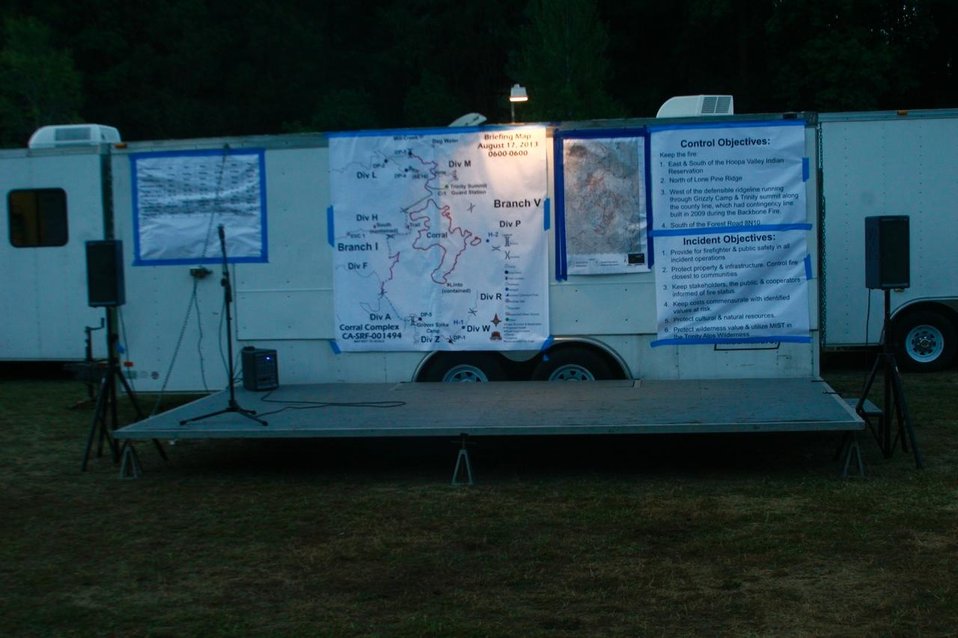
The Corral Complex Fire Incident Command Post glows under a light at night. The Corral Complex Fire in the Six Rivers National Forest near the Trinity Alps Wilderness area in California began on Aug. 10, 2013 by lightning and has consumed approximately 4, 450 acres.